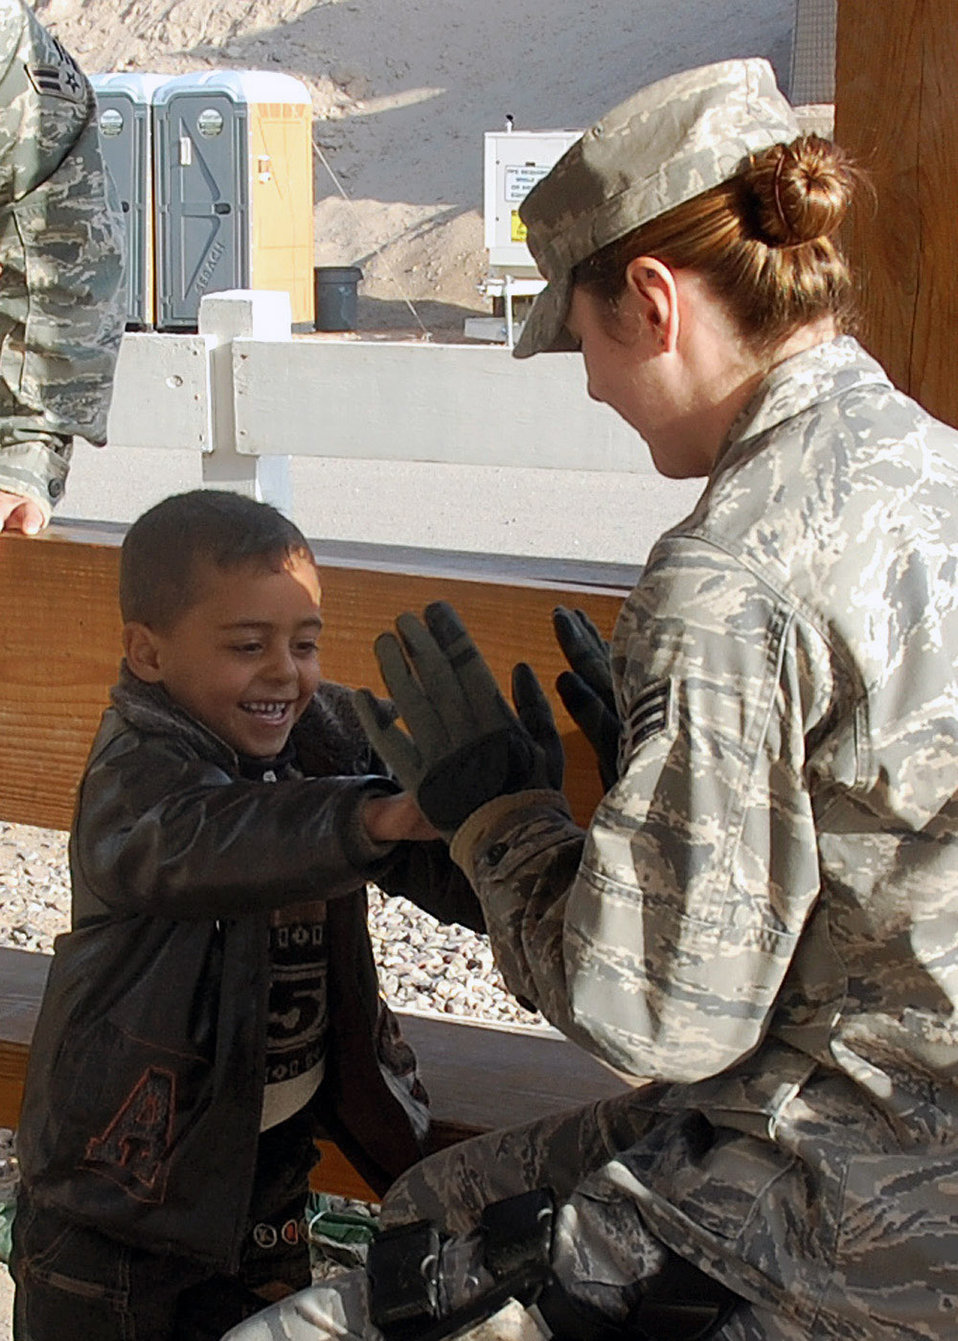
Camp Bucca Airmen make difference with smiles

Senior Airman Tarann Earl plays with an Iraqi child while they wait for transportion to the detainee visitation center Jan. 27 at Camp Bucca, Iraq. Members of the 887th Expeditionary Security Forces Squadron provides security and transportation to the center for Iraqis who are allowed to visit daily with detained family members held at the Theater Internment Facility. Airman Earl is assigned to the 887th ESFS.